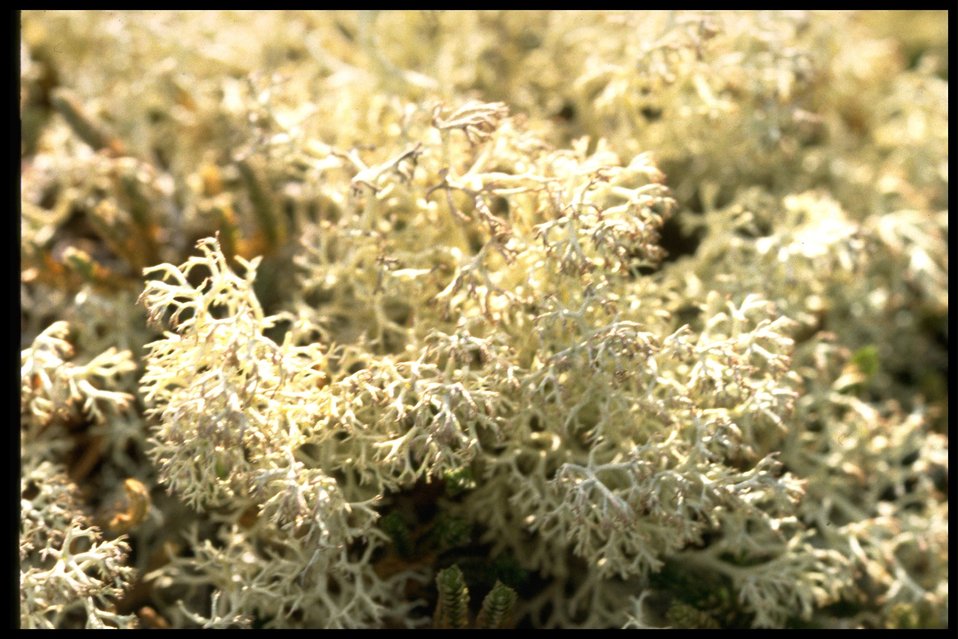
Close up of Lichen at Point Colville.